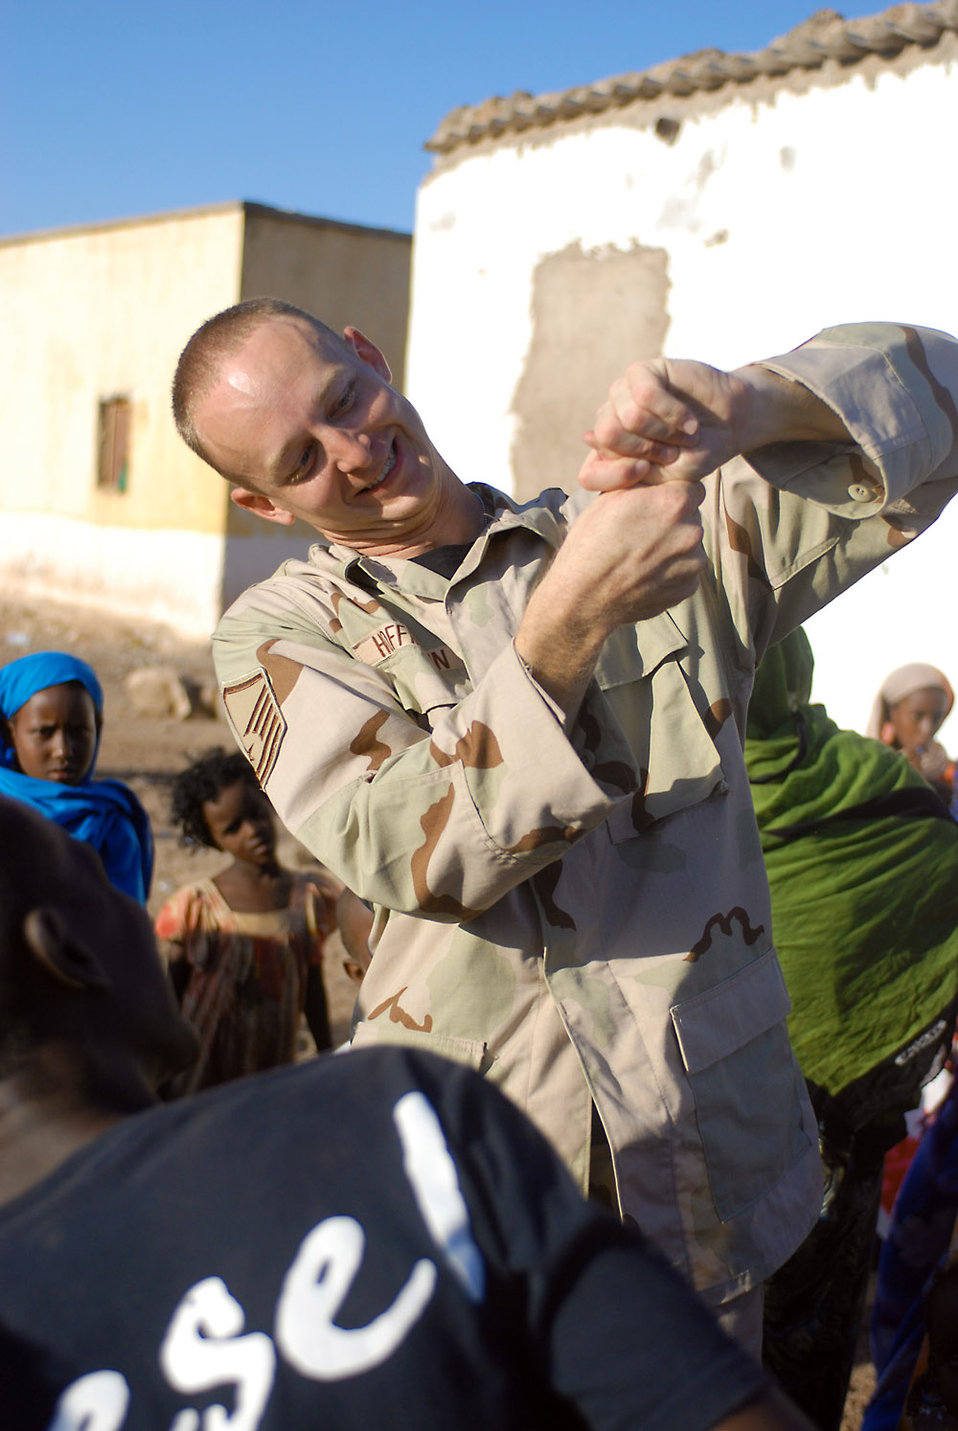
Airmen, Marines team up for Djibouti humanitarian mission

Master Sgt. Dennis Hoffman gives an impromptu magic show Oct. 23 for the children of Nagad, Djibouti. Sergeant Hoffman is a drummer with the U.S. Central Command Air Force's Expeditionary Band Live Round. The band is touring Djibouti to perform a series of morale and community outreach concerts.